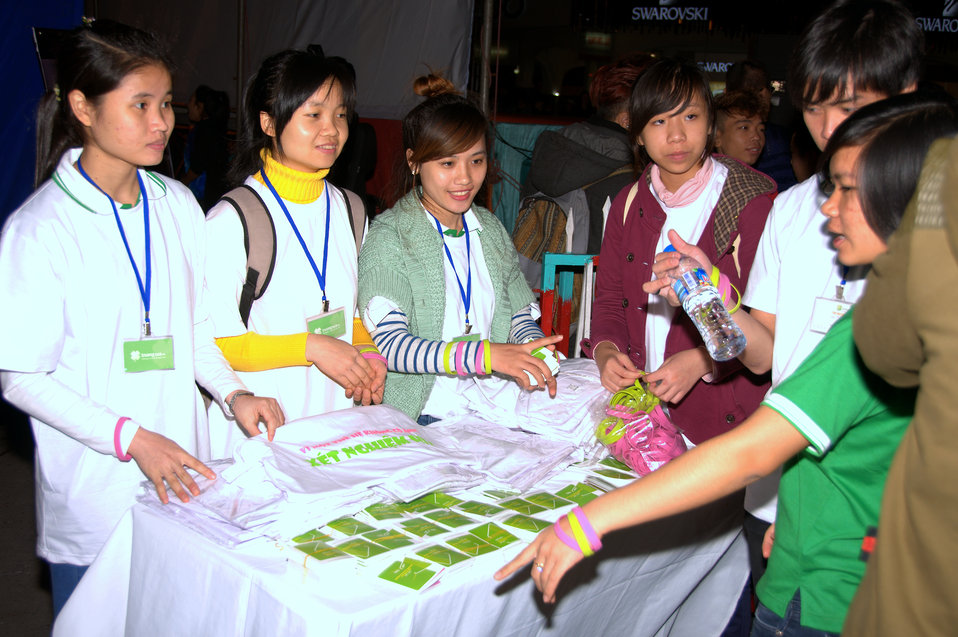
USAID and PEPFAR supports an outdoor concert to promote Vietnam's national action month for HIV

Hanoi, December 18, 2012.